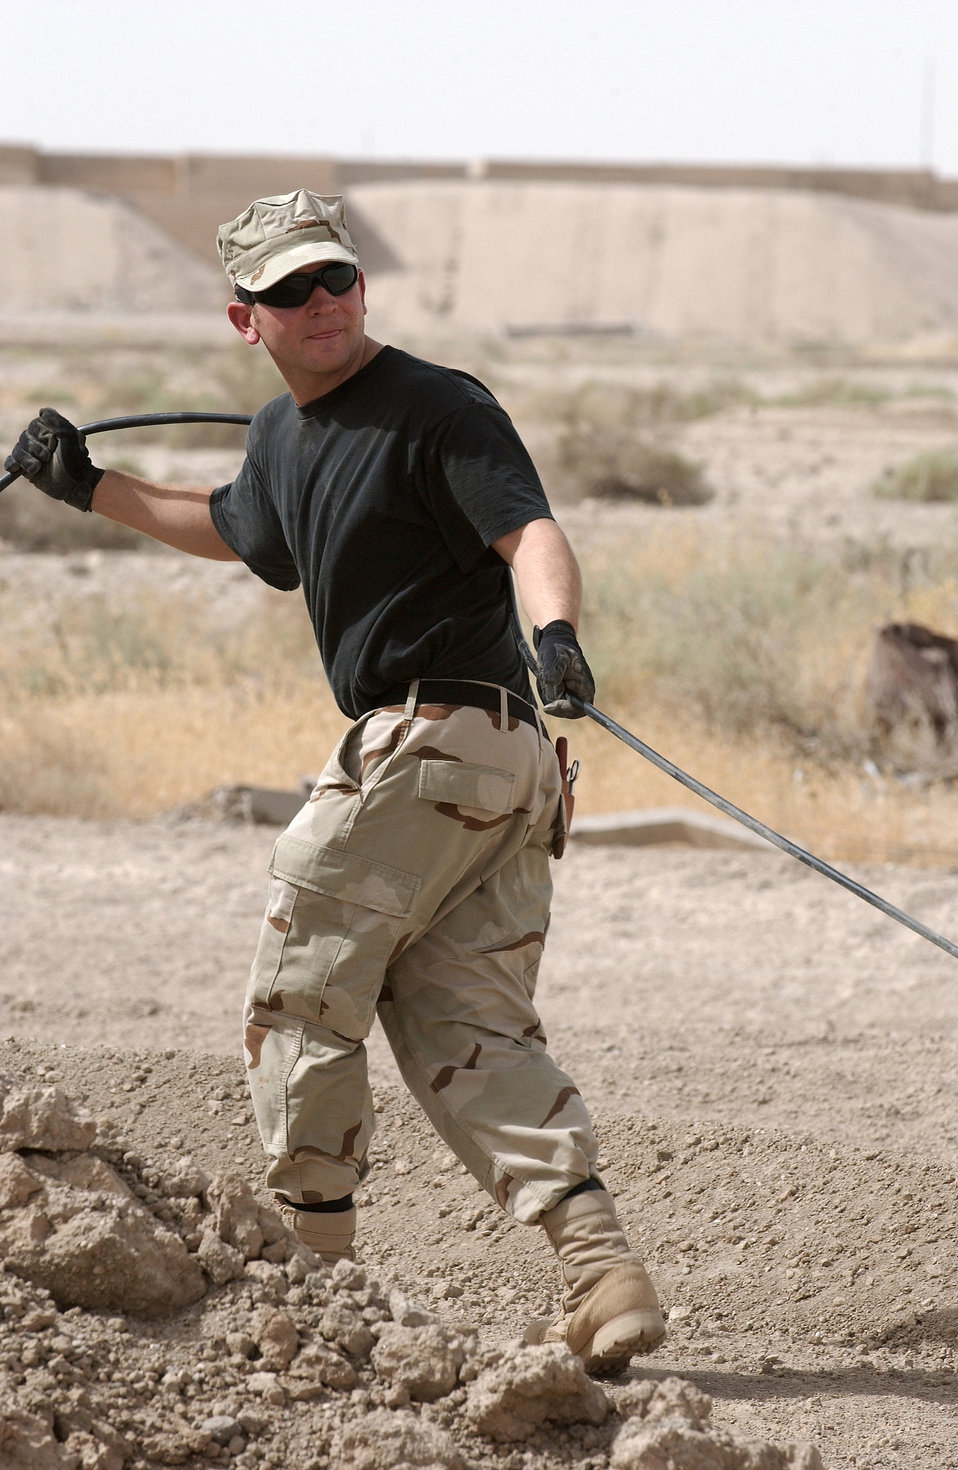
IRAQI FREEDOM

TALLIL AIR BASE, Iraq, Iraq -- Tech. Sergeant Mark Morris pulls on fiber to replace cable that was destroyed due to construction here. Sergeant Morris is assigned to the 407th Expeditionary Communications Squadron and deployed from McConnell Air Force Base, Kan.